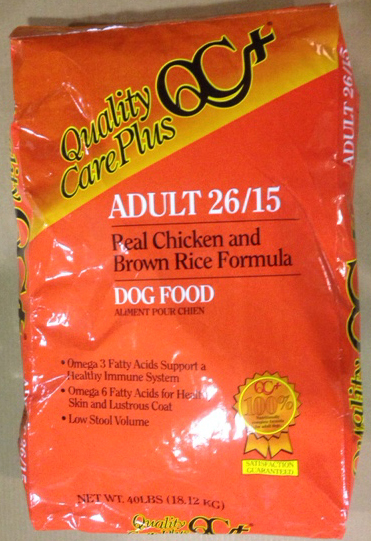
RECALLED – Dog Food, Cat Food

February 5, 2014 – Product Recall – Pro-Pet LLC Recalls a Limited Number of Dry Dog and Cat Foods Due to Possible Salmonella Contamination.